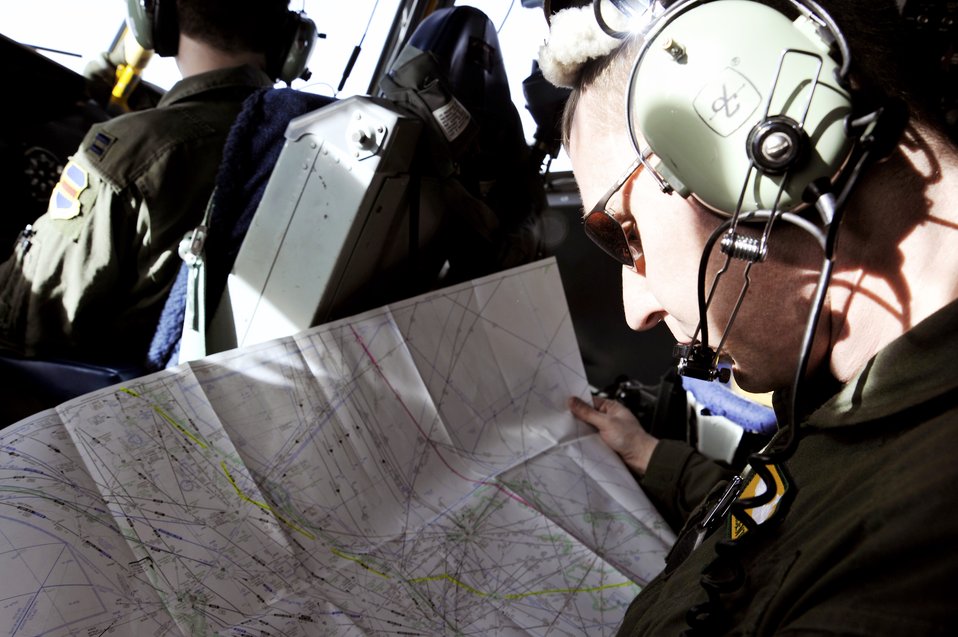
OC-135 crews assist from 15,000 feet

Maj. Vincent Zalesky checks navigational maps and provides another set of eyes for pilots flying the OC-135B Open Skies aircraft Jan. 16, 2010, over Haiti. Major Zalesky is a pilot with the 45th Reconnaissance Squadron at Offutt Air Force Base, Neb.